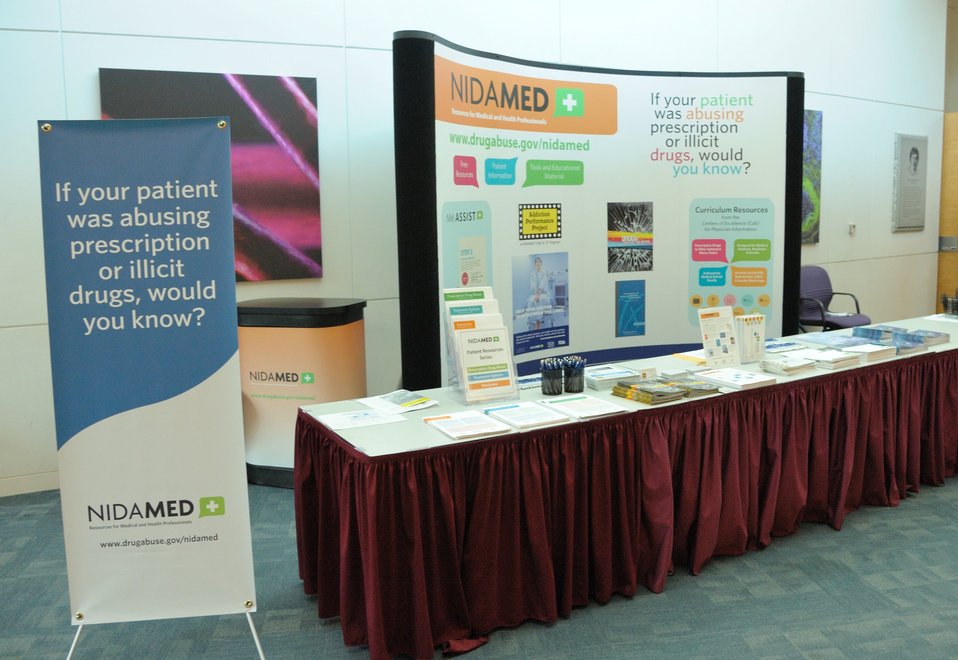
NIDAMED booth at the Addiction Performance Project, held Aug 5, 2011 on the NIH Campus